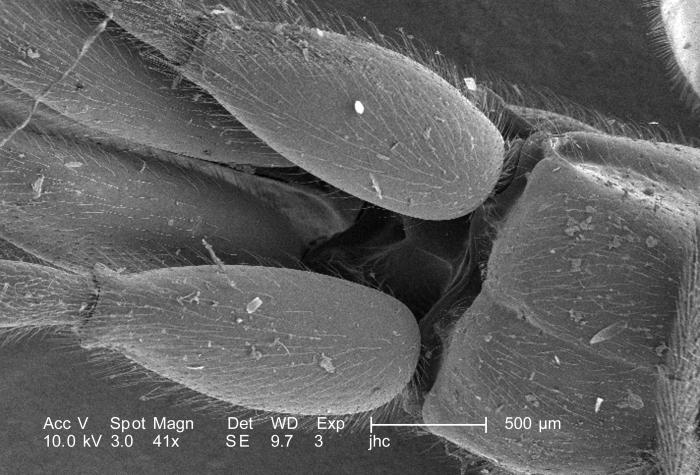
Under a low magnification of 41X, this scanning electron micrograph (SEM) revealed some of the exoskeletal ultrastructural morphology of an unidentified debris-laden insect, which had been discovered deceased in the suburbs of Decatur, Georgia. Depicted in this particular image, was a ventral view of the organism's thoracic region, from which emanated the six jointed legs upon which this insect maneuvered through its environment. The scattered particulate matter adorning the insect's exoskeletal surface was merely environmental debris common to its habitat. The fact that this organism maneuvered about on jointed legs, placed it into the Phylum Arthropoda, i.e., Arthro